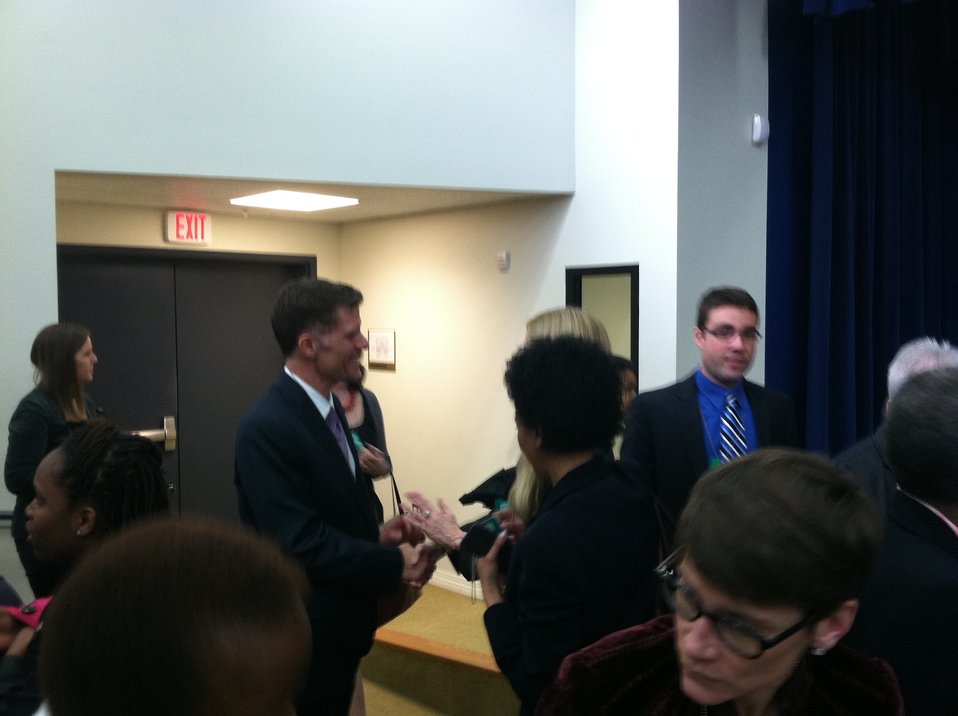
Grant - March 14